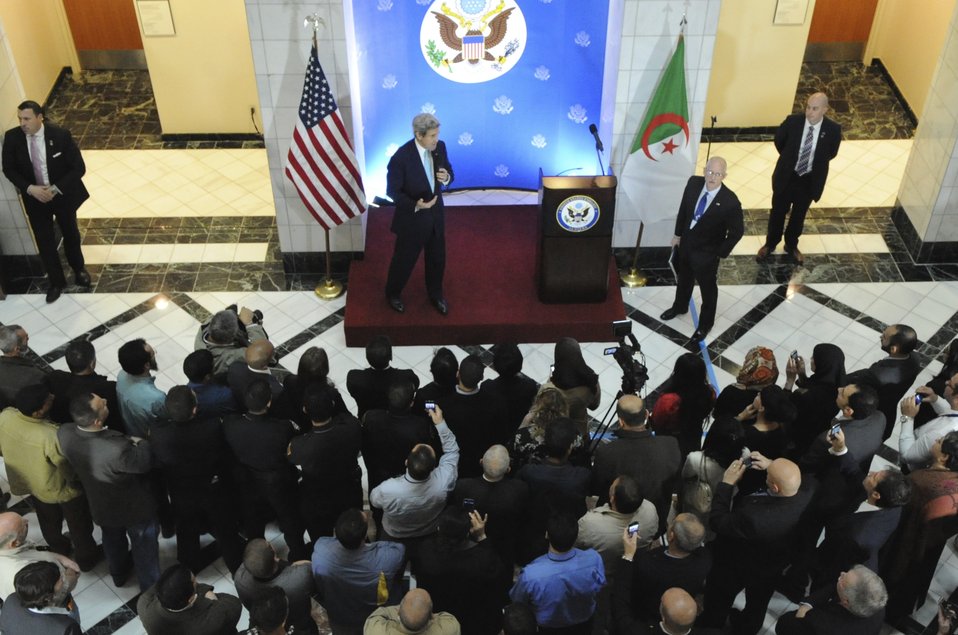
Secretary Kerry Thanks Embassy Algiers Employees

U.S. Secretary of State John Kerry thanks staff and family members at Embassy Algiers for their help with staging a Strategic Dialogue between the United States and Algeria during a visit to their workplace in Algiers, Algeria on April 3, 2014.